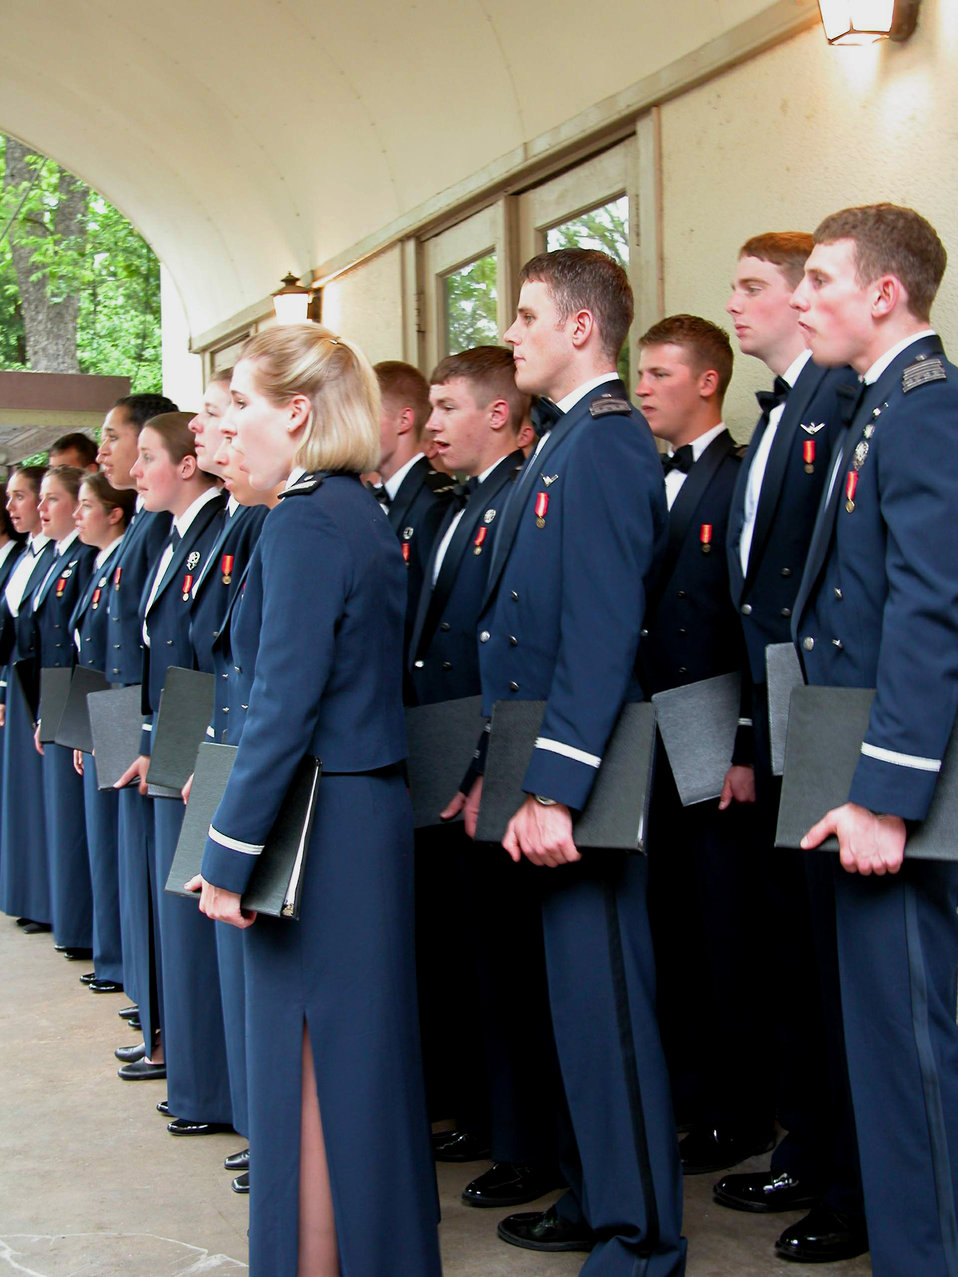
Fiesta music

SAN ANTONIO -- Members of the U.S. Air Force Academy Cadet Chorale perform here April 23 during a Fiesta event.